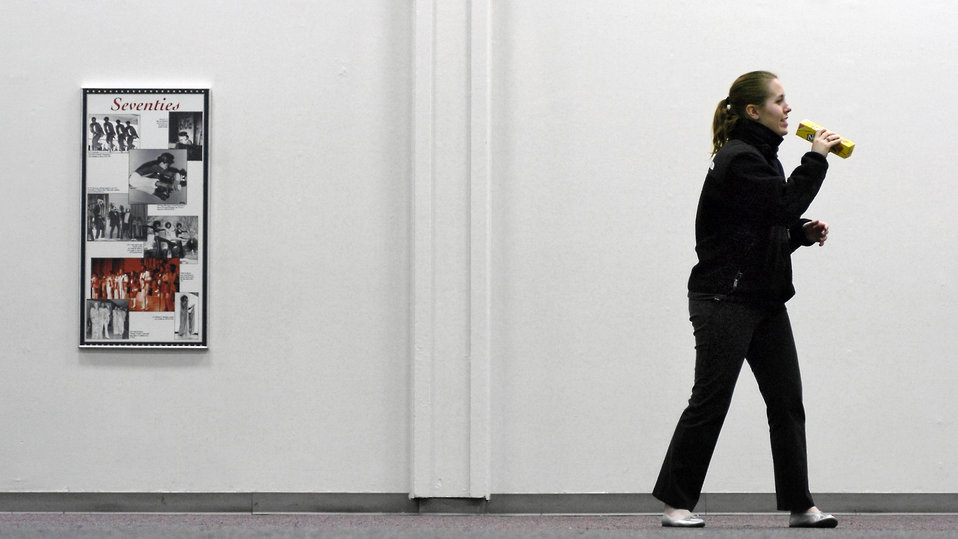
Tops In Blue

LACKLAND AIR FORCE BASE, Texas (AFPN) -- Second Lt. Mary Ledet practices for the Air Force Worldwide Talent Contest with a box of cookies as a microphone. More than 60 Airmen auditioned and practiced this week. The week ended with a live performance at the Worldwide Talent Contest. Along with trophies, they competed for a spot in the 2006 Tops In Blue tour. Lieutenant Ledet is stationed at Kirtland Air Force Base, N.M.